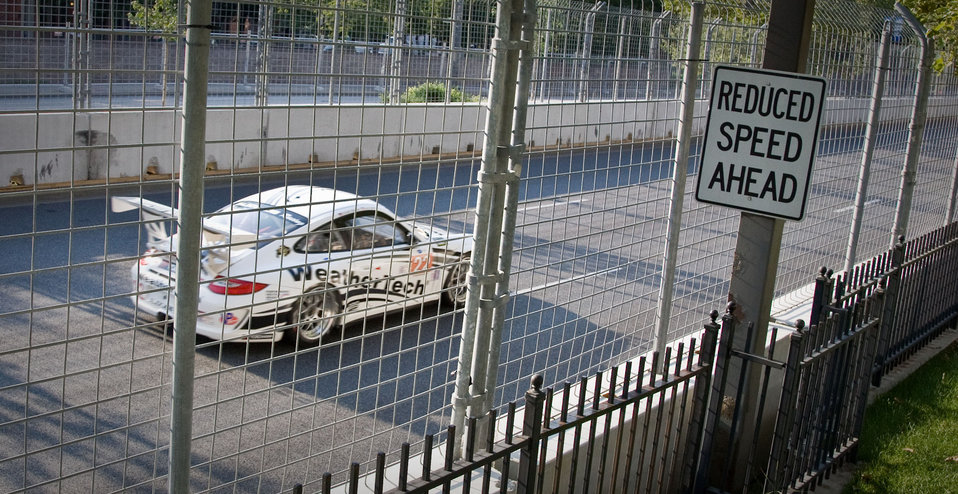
Porsche GT3 race cars (GT Challenge class) of the the American Le Mans Series (ALMS) motorsport challenge practice for thier race, during the Baltimore Grand Prix, on the streets of downtown Baltimore, MD on Friday, August 31, 2012, Labor Day Weekend. ALMS says they are “the Global Leader in Green Racing by being the only racing series recognized to comply with the Green Racing protocols developed by the U.S. Department of Energy (DOE), the U.S. Environmental Protection Agency (EPA) and Society of American Engineers International (SAE).” Instead of high-octane gasoline all the cars in the series uses one of 5 different forms of energy (system). Clean diesel, E85, E10, isobutanol or hybrid energy technology. The specific hybrid system, used by the Porsche GT3 cars, are a (battery-less) flywheel-based Kinetic Energy Recovery Systems. These organizations are accelerating technology development at speeds up to 200 mph, in 650-700 horsepower race cars that are based on two groups of cars; the purpose built prototype race cars and the GT ( Grand Touring) cars based on production sports cars that you can see in showrooms. From these groups, there are five classes of cars, all of which race at the same time during the race events.
The U.S. Department of Agriculture (USDA) focuses on renewable fuel sources that are profitable and sustainable. 2011 accomplishments include research and planning for renewable energy and investments in renewable energy production.
- Completed a Biofuels Roadmap proposing a plan of action to meet congressionally mandated RFS2 goals for national biofuels production.
-Coordinated five regional research centers to work on the science necessary to ensure profitable biofuels can be produced from a diverse range of feedstocks across the nation, not just in the Midwest where the industry is already thriving.
-Over three years, USDA invested about $320 million to accelerate research on renewable energy ranging from genomic research on bioenergy feedstock crops, to development of biofuel conversion processes and costs/benefit estimates of renewable energy production.
- More than 130 biodiesel and ethanol projects funded by USDA are currently producing almost 3.7 billion gallons of biodiesel and ethanol annually, enough fuel – in equivalence to gasoline – to keep five million vehicles on the road every year.
-We are supporting efforts to build five biorefineries to produce advanced biofuels in states from Florida and Michigan to New Mexico, with investments worth about $310 million. We are supporting facility upgrades and feasibility studies for advanced biofuels projects in every region of the country.